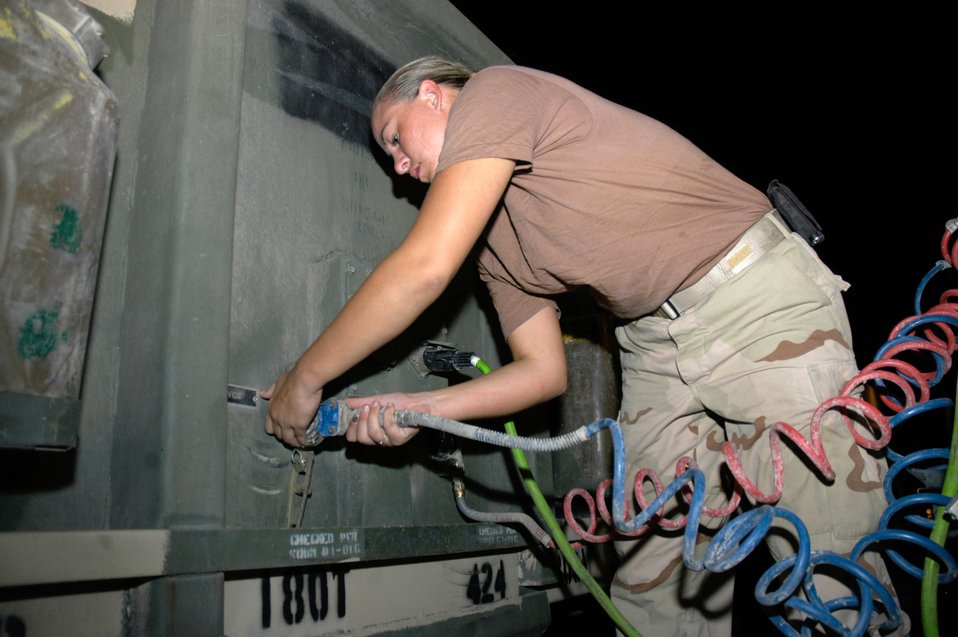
Convoy Airmen face challenging duties

Senior Airman Rachael Cover connects a trailer to a truck during a pre-mission maintenance check. The 424th and 70th Medium Truck Detachments are responsible for convoy operations in Southwest Asia. Airman Cover is a vehicle operator with the 424th MTD.